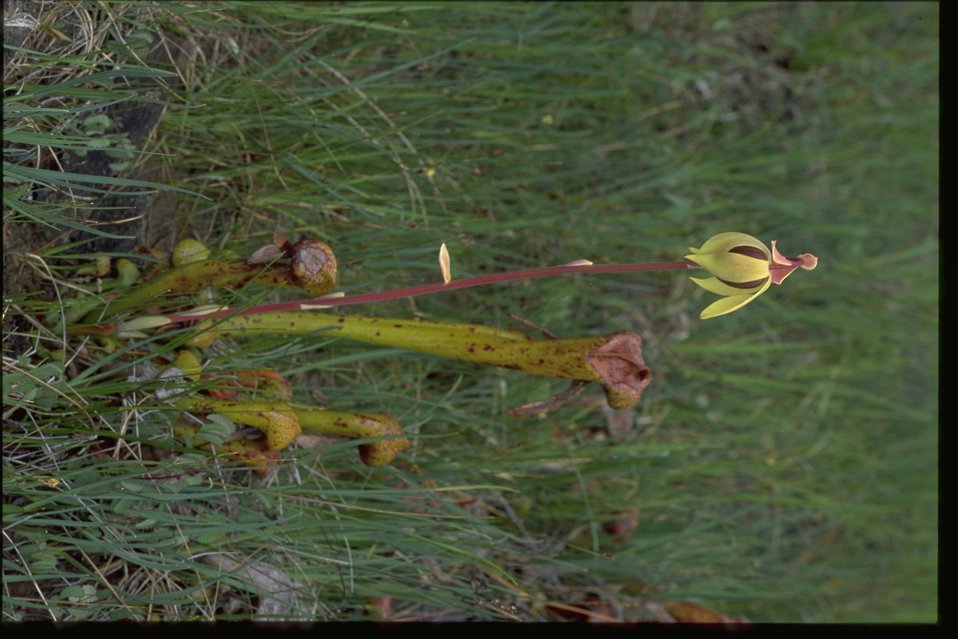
Medium shot of Cobra Lily, Darlingtonia californica.